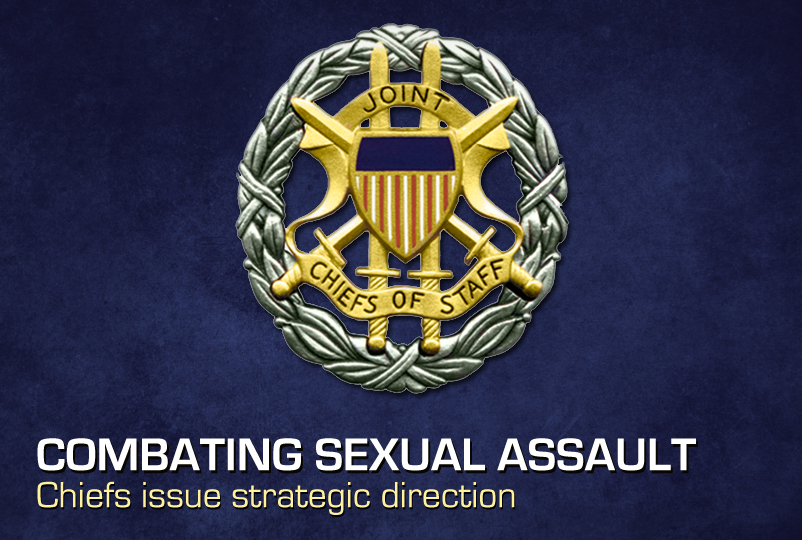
Combating Sexual Assault